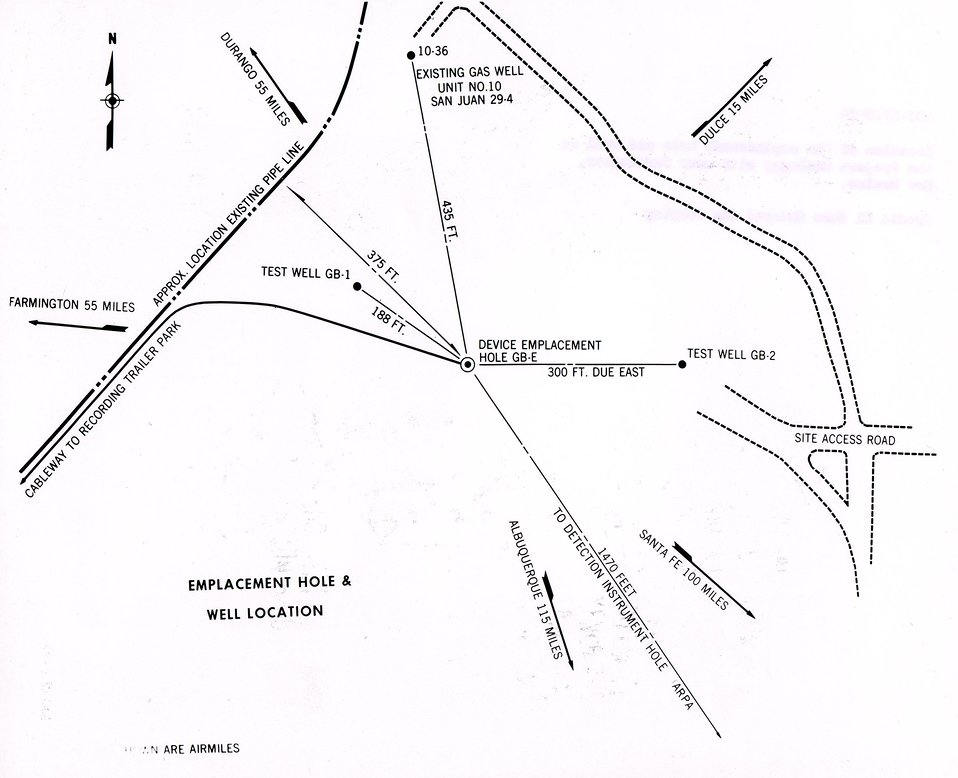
Location of the emplacement hole and well on the Project Gasbuggy site near Farmington, New Mexico. Circa 1967.